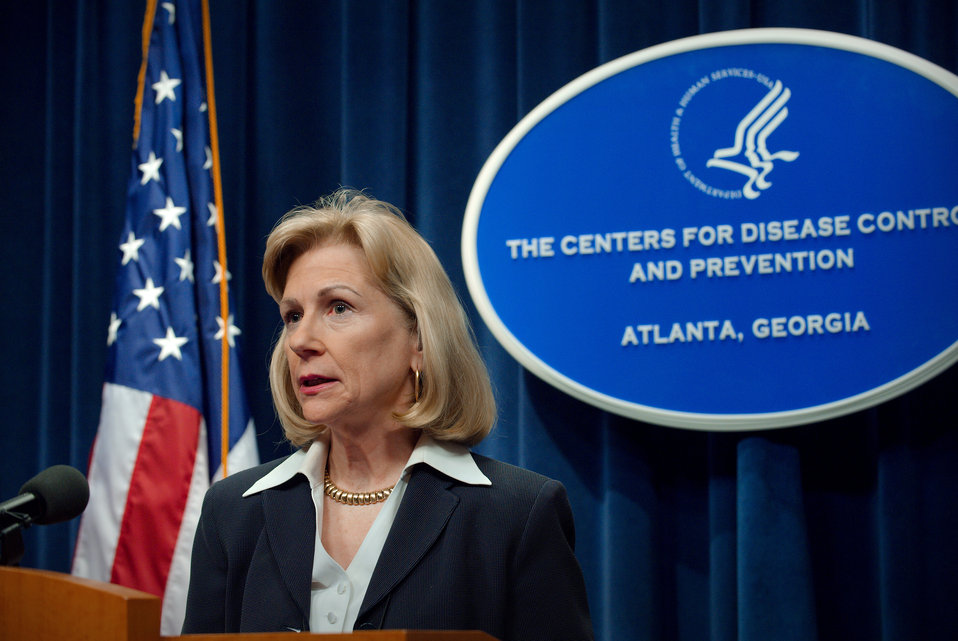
This 2009 photograph depicts the Chief of the Influenza Branch for the National Center for Infectious Diseases, Nancy Cox, Ph.D., at the podium during a Centers for Disease Control (CDC) press briefing held in order to discuss an update in the investigation of cases of swine influenza in California and Texas. CDC issued an MMWR dispatch on Tuesday, April 21, 2009. This briefing updated information included in the dispatch.